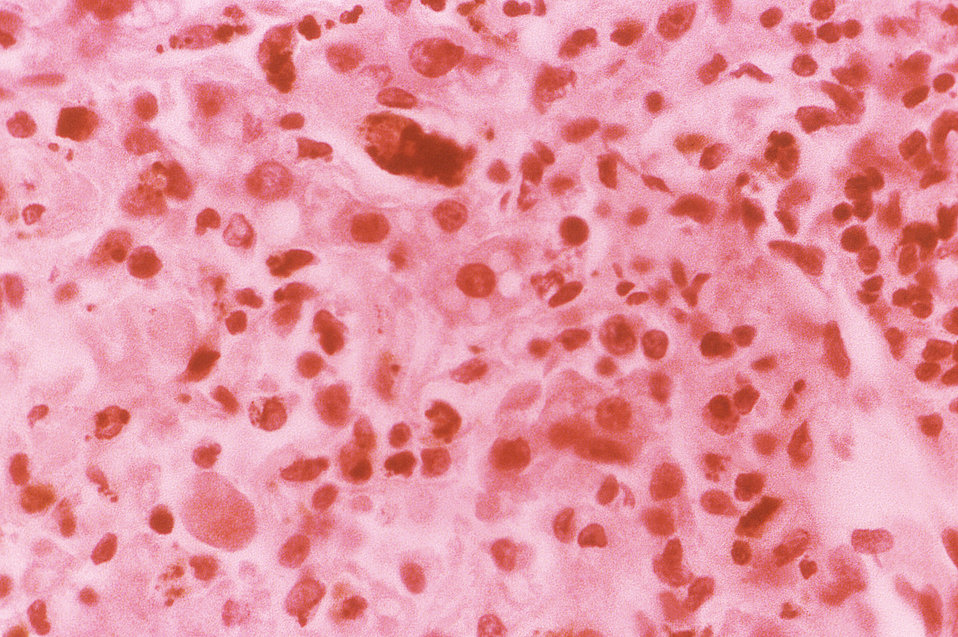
Under a high magnification of 400X, this hematoxylin-eosin-stained (H&E) photomicrograph depicts the cytoarchitectural changes found in a liver tissue specimen extracted from a deceased yellow fever patient, who'd also endured a malarial infection. Note that besides the presence of Councilman bodies and several cells succumbing to fatty degenerative changes, which are typical in the case of yellow fever, you'll also notice haemosiderin-filled Kuppfer cells. See PHIL 2176, and 8239, depicting TEMs of the yellow fever virus.